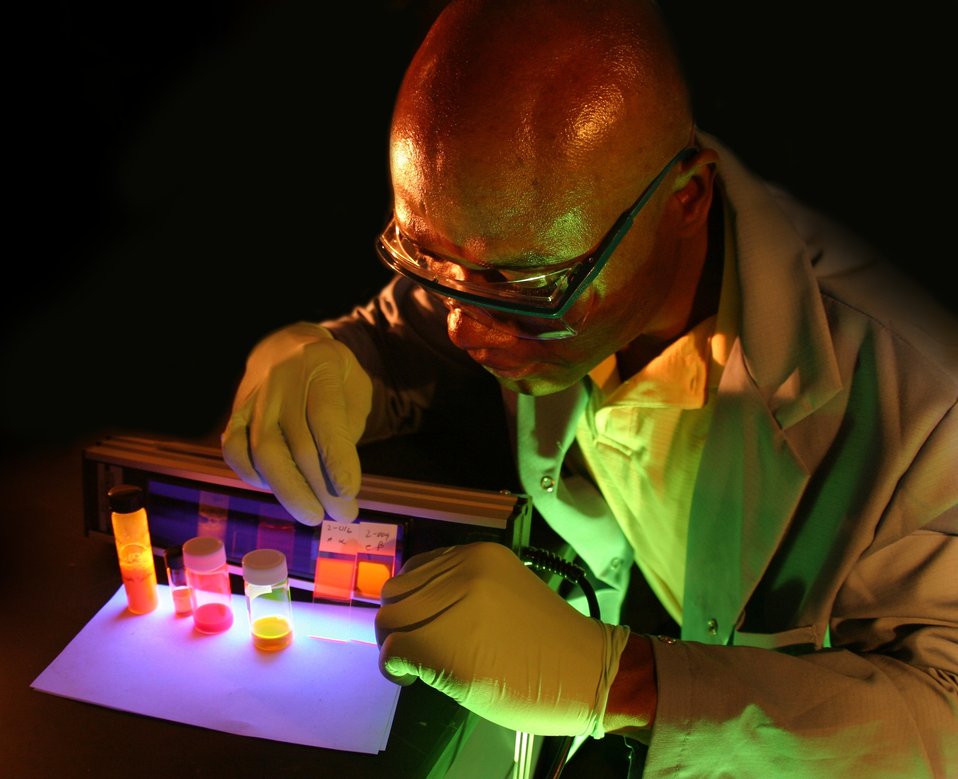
DISTINGUISHED CINT POSTDOCTORAL RESEARCH FELLOW ALFRED J. WOOTEN EXAMINES LUMINESCENT QUANTUM NANODOTS.

CINT is one of five NSRC's throughout the U.S. that form an integrated national program, affiliated with major facilities at the DOE's national laboratories, to cover the diverse aspects of nanoscience and technology. The complex aspires to become a cornerstone of the nation's nanotechnology revolution, contributing to DOE's principle missions in national defense and the environment while providing an invaluable resource for universities and industries. It's core facility in Albuquerque and gateway facilities at Los Alamos and Sandia National Laboratories. CINT provides open aces to tools and expertise needed to explore the continuum from scientific discovery to the integration of nanoscience into the Micro and Marco world.